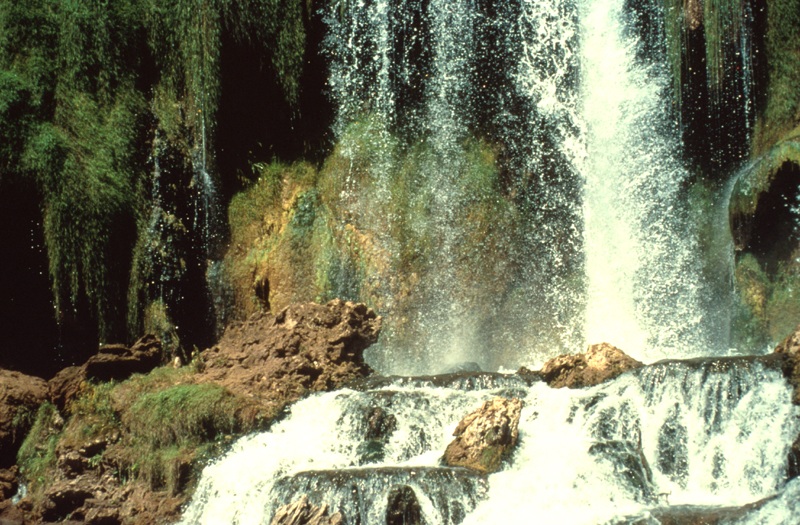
Fall Creek Falls Snake River Canyon